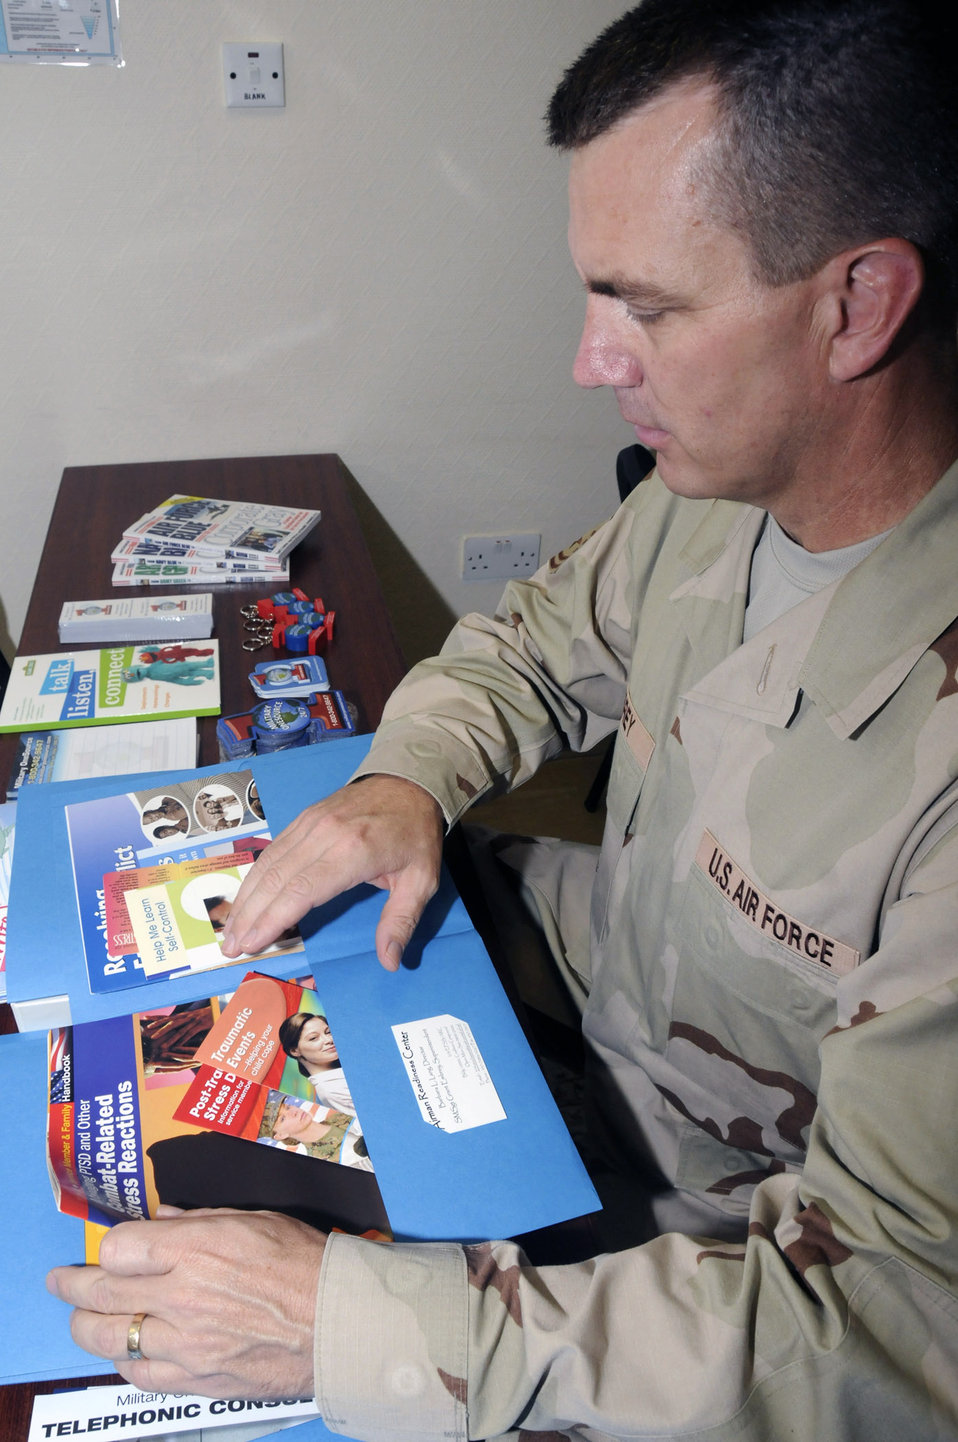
Operations Iraqi Freedom, Enduring Freedom and Joint Task Force-Horn of Africa

Senior Master Sgt. Grant Embrey puts together an Airmen Readiness Center folder which contains information on many topics beneficial to Airmen in the area of responsibility. Sergeant Embrey is the 379th Expeditionary Force Support Squadron superintendent of the Airmen Readiness Center.